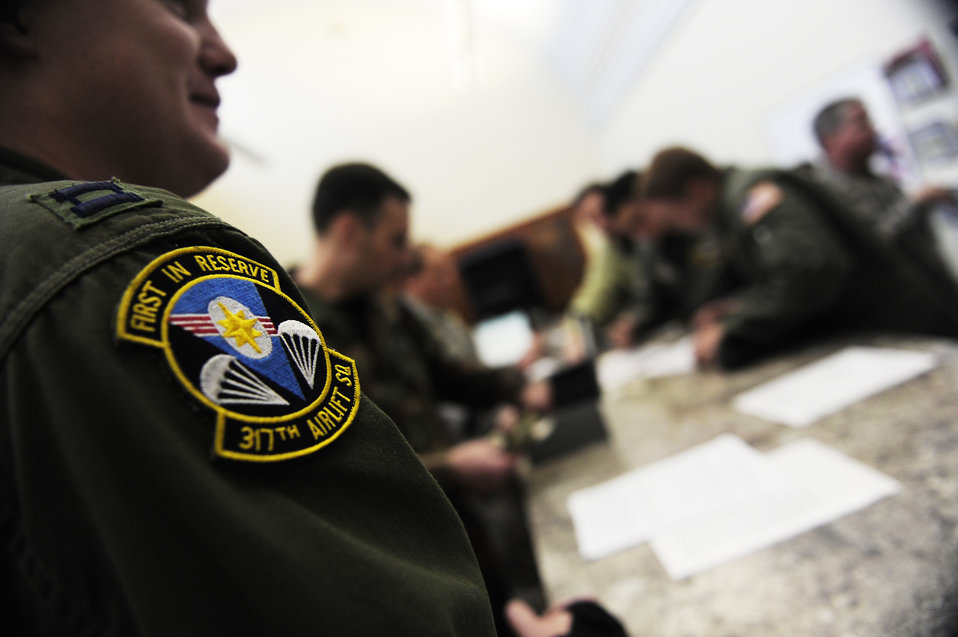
Haiti Relief Operations

Airmen prepare to participate in a relief effort to Haiti, Jan. 14, 2010 at Charleston Air Force Base, S.C. The Airmen are reservists from the 317th Airlift Squadron, 437th Air Mobility Wing.